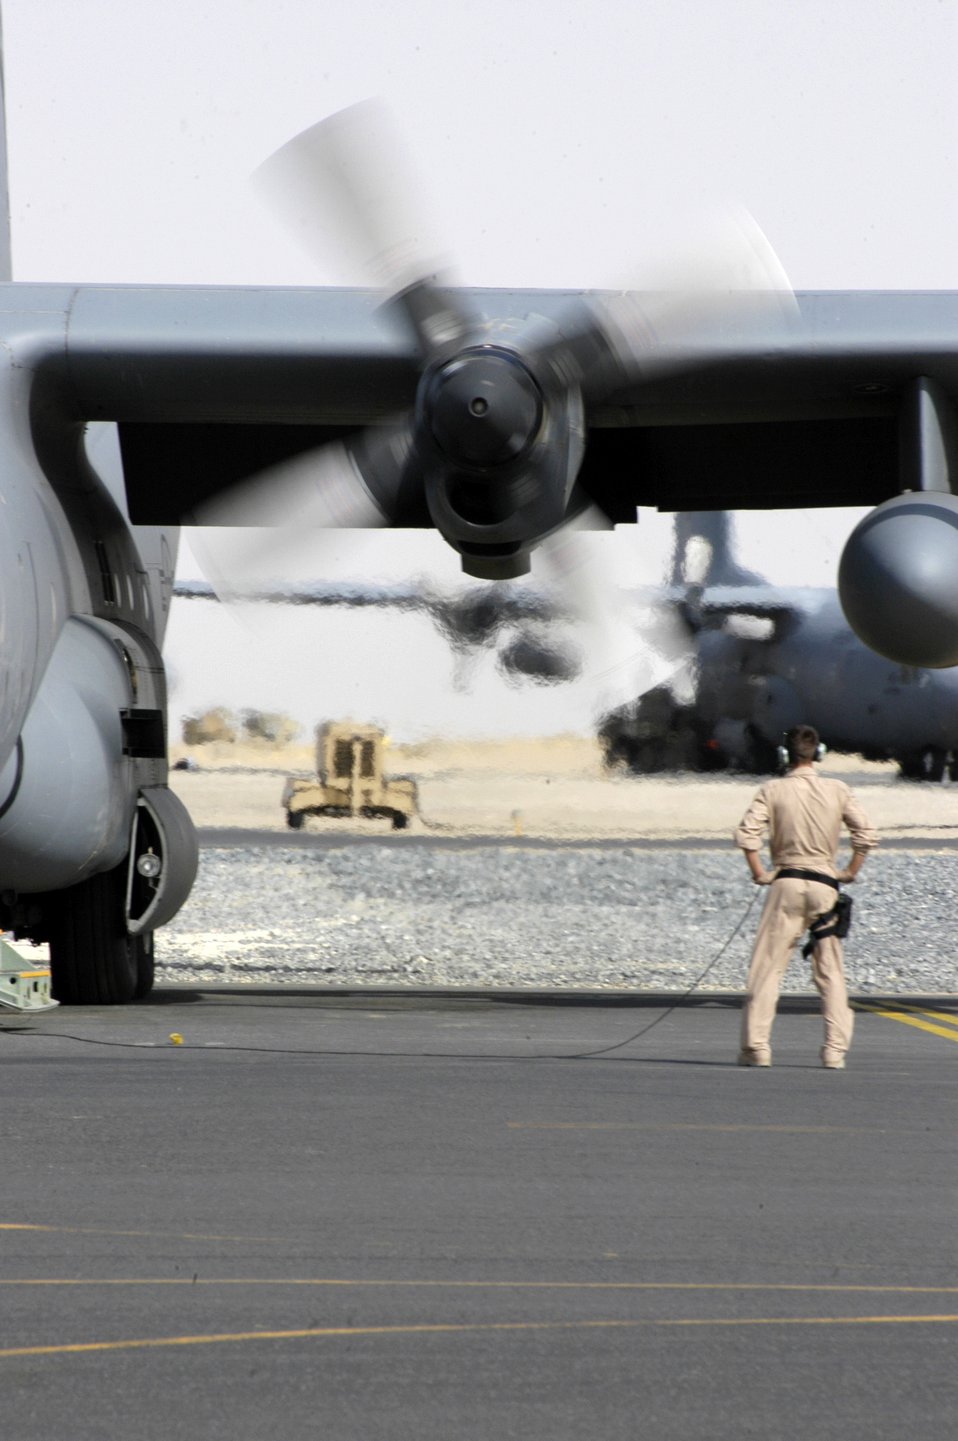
Mighty Hercules

Aircrew and maintainers go over final pre-flight checks on a C-130 Hercules before a mission at a deployed location in Southwest Asia on Tuesday, June 20. The Airmen are with the 386th Air Expeditionary Wing.